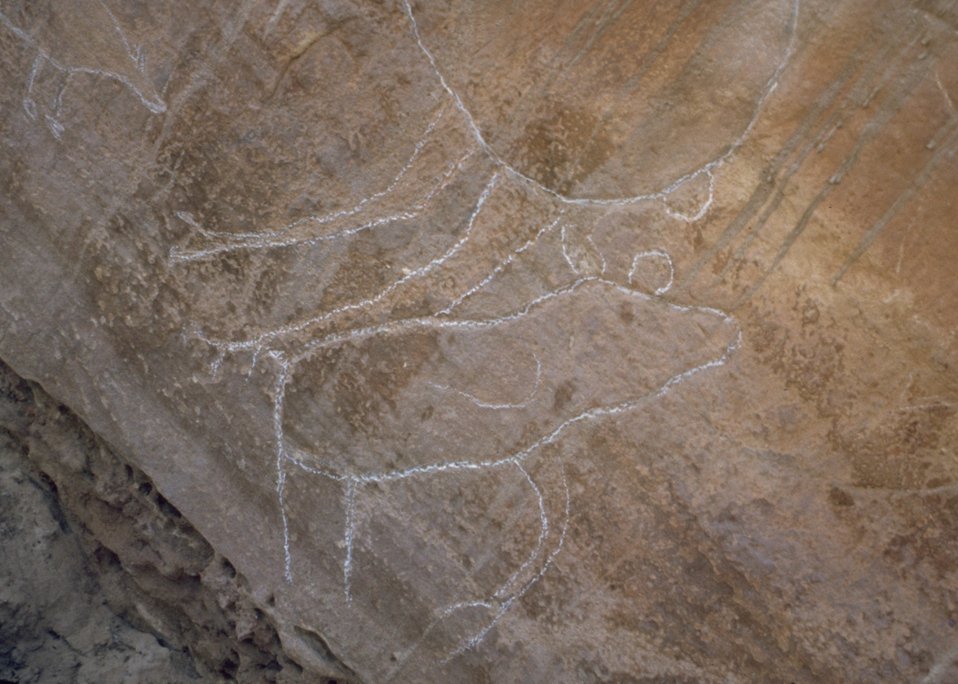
Petroglyph panel in Whoopup Canyon, Newcastle Field Office.